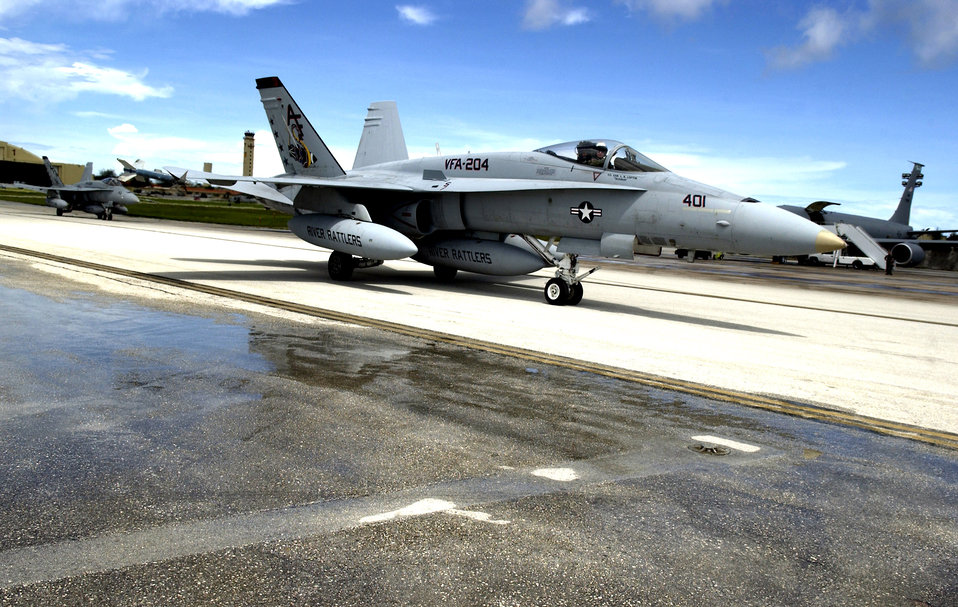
Airpower key to Exercise Valiant Shield

Navy F-18 Hornets from the Naval Air Station's Joint Reserve Base in New Orleans arrive to take part in the Valiant Shield exercise Aug. 6 at Andersen Air Force Base, Guam. During the exercise being held Aug. 6 to 13, Airmen will participate in integrated joint training with Navy and Coast Guard forces. Air Force aircraft and personnel from stateside bases and Kadena Air Base, Japan, will comprise part of an expeditionary air wing based at Andersen AFB.